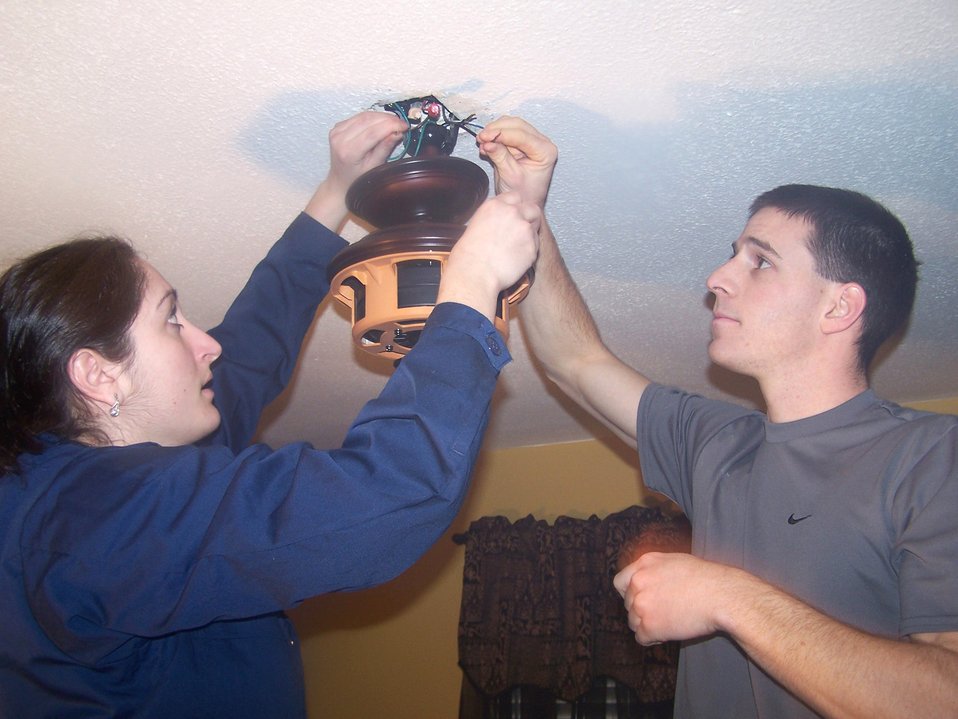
Airmen help pick up the pieces for those in need

Senior Airman Christy Cadle and Airman 1st Class Troy Sergeant work on electric wiring for a light fixture in a home in Bay St. Louis, Miss. The home was damaged by Hurricane Katrina more than a year ago. Airman Cadle is assigned to the 354th Aircraft Maintenance Squadron and Airman Sergeant is from the 354th Civil Engineer Squadron. Both are from Eielson Air Force Base, Alaska.